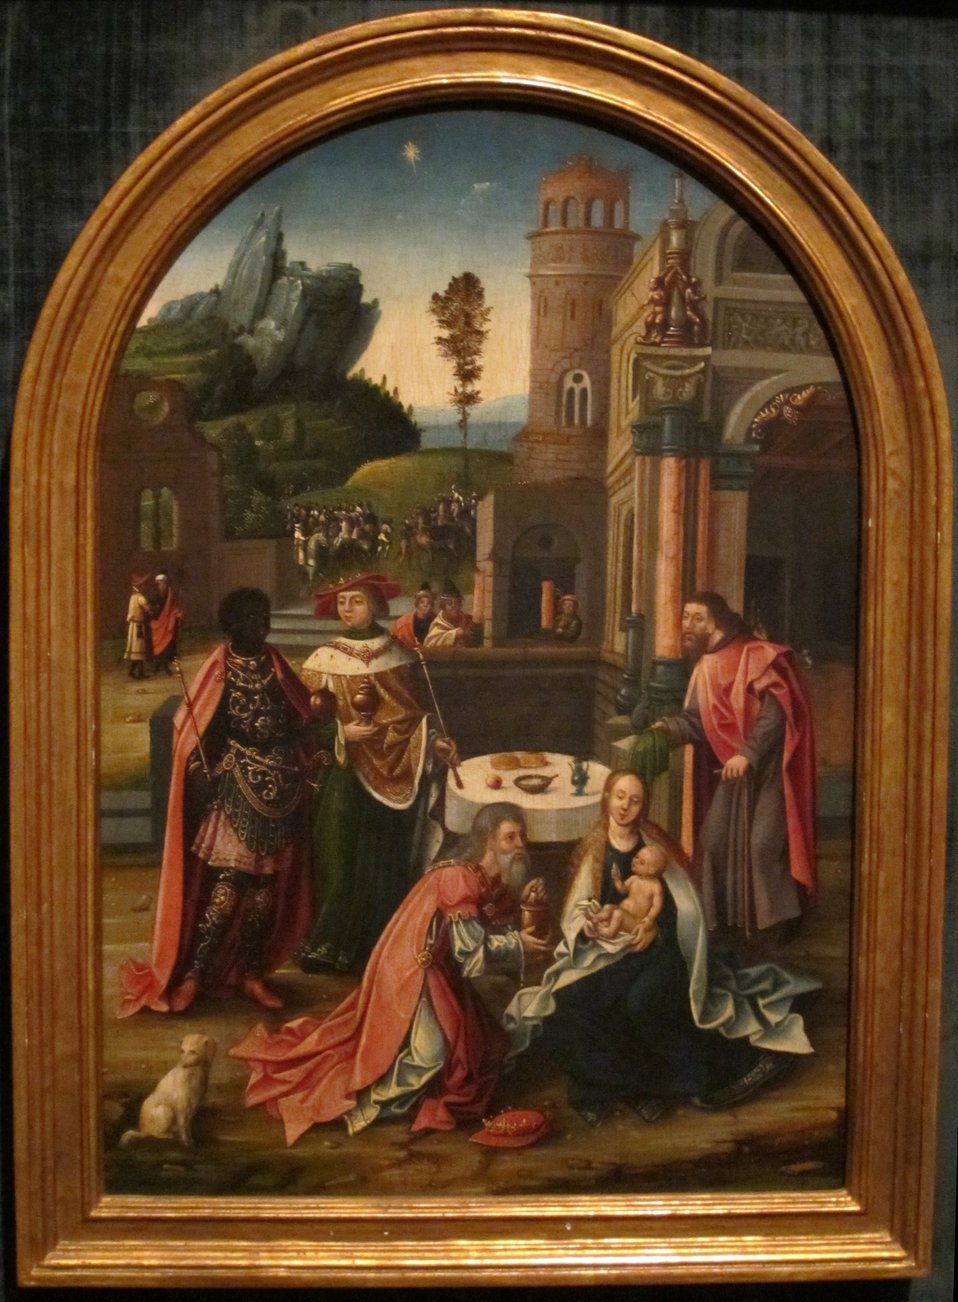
'Adoration of the Magi', Flemish school oil on wood painting, Antwerp, early 16th century